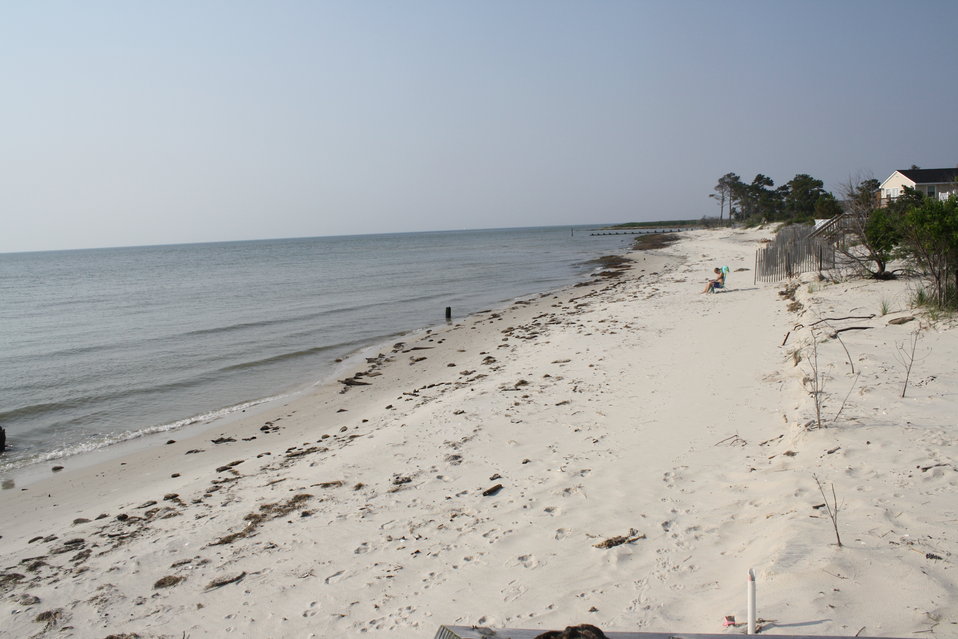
Bavon Beach project

The shoreline at Bavon Beach has the ebb and flow of the changing tide. As waves move sand further north, vacationers and year-round residents continue losing the buffer between their homes and the looming ocean.